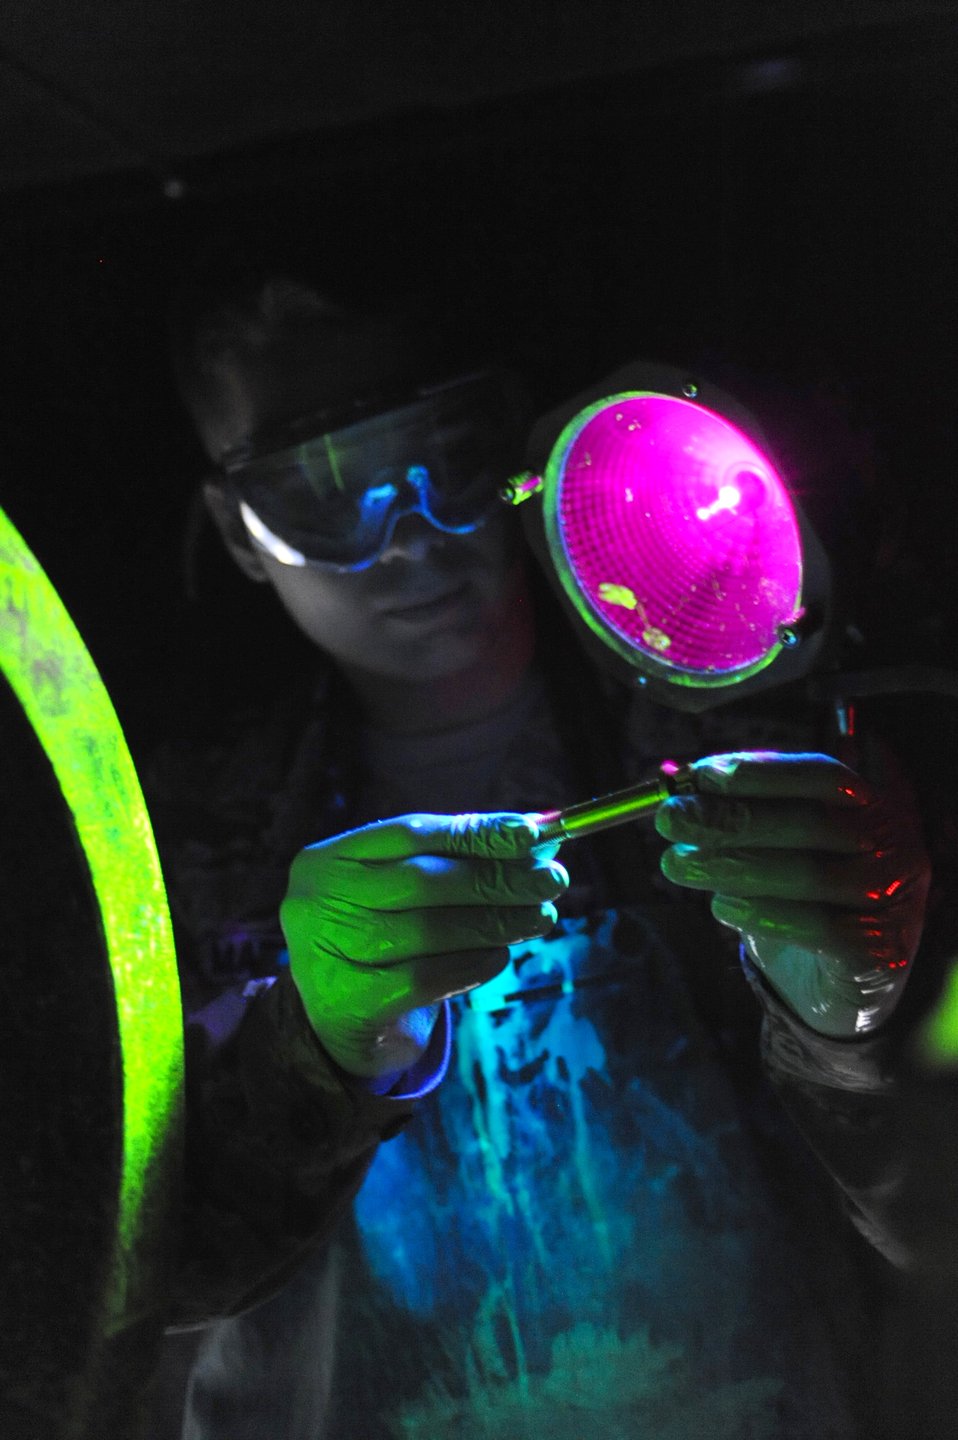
A colorful inspection

Staff Sgt. Richard Mabry searches for cracks on a B-1B wheel bolt May 7, 2010, at an air base in Southwest Asia. Sergeant Mabry is a non-destructive inspection craftsman with the 379th Expeditionary Maintenance Squadron.